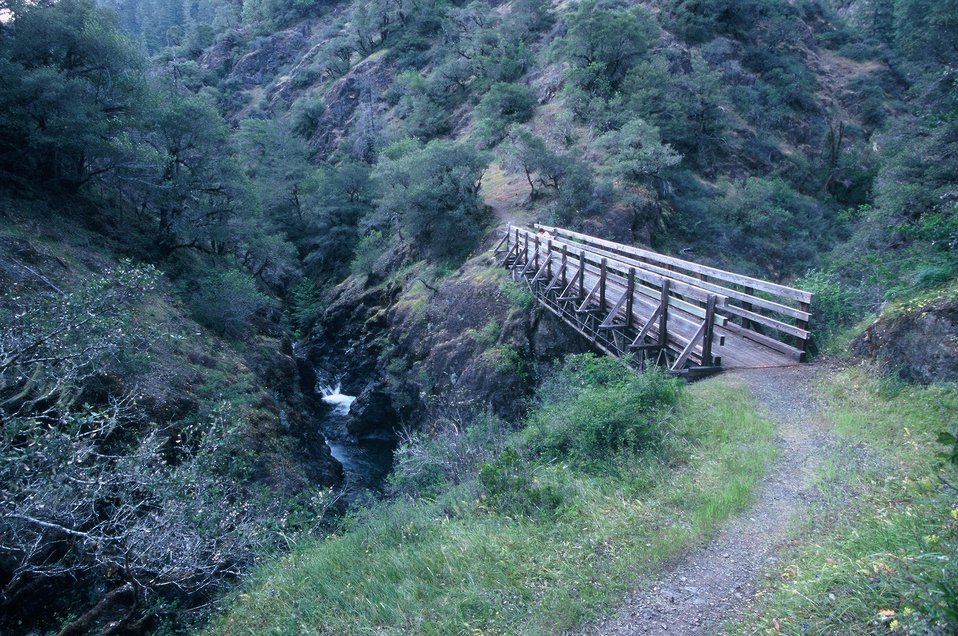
Wild section of the Rogue River from Grave Creek to Foster Bar May 19 to May 22.